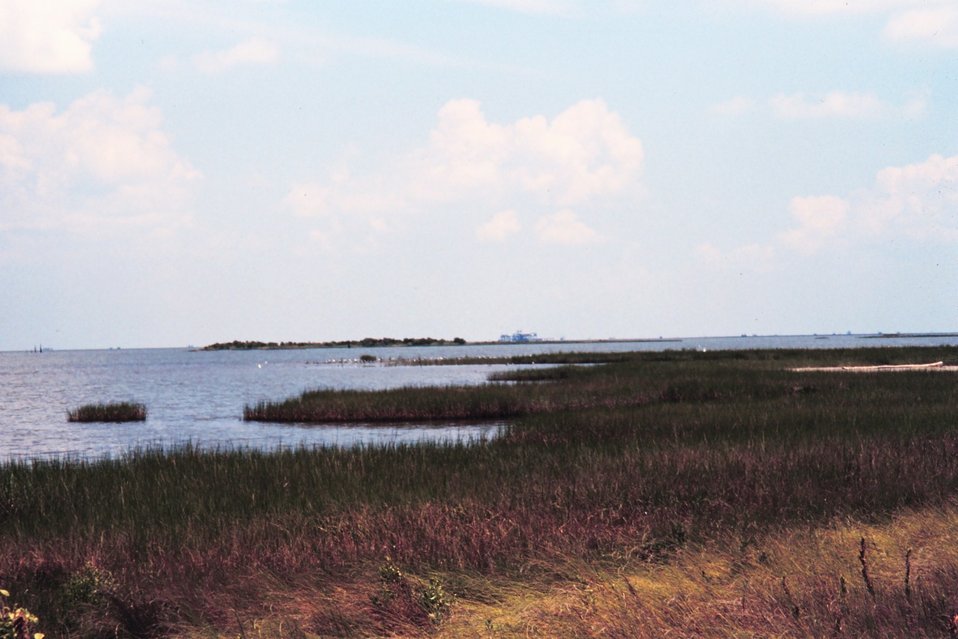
Broken marsh in Barataria Basin just west of the levee